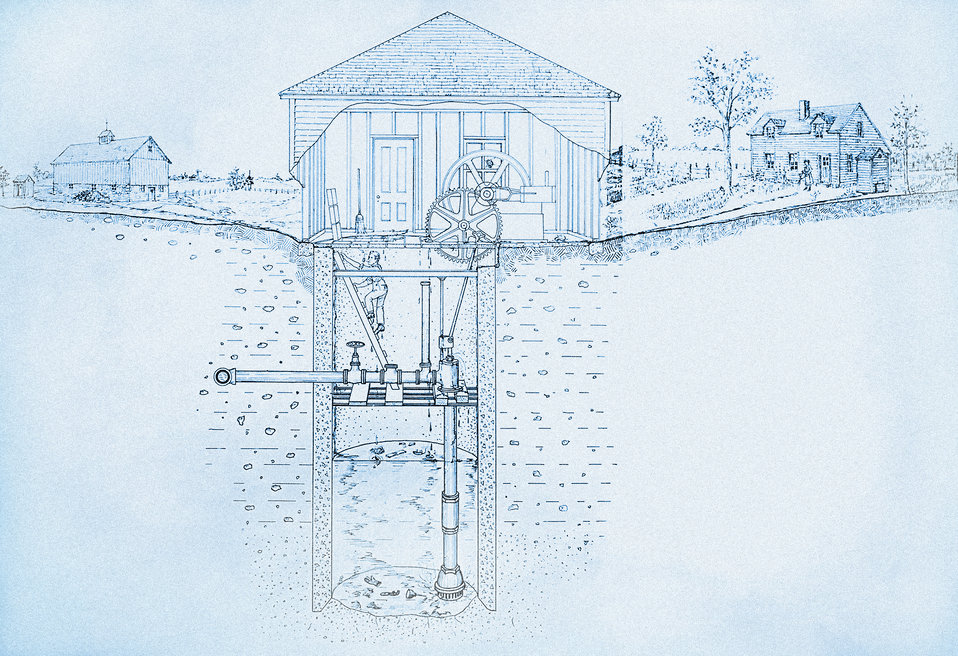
This historic 1922 drawing, which had been digitally enhanced and colorized, depicted the features of an improperly located and constructed municipal 'dug'-type well. Note the well's location downhill from a barn, a house, and a privy. Liquid wastes from those three sources ran downhill, leaching into the soil, and then into the potable water source.